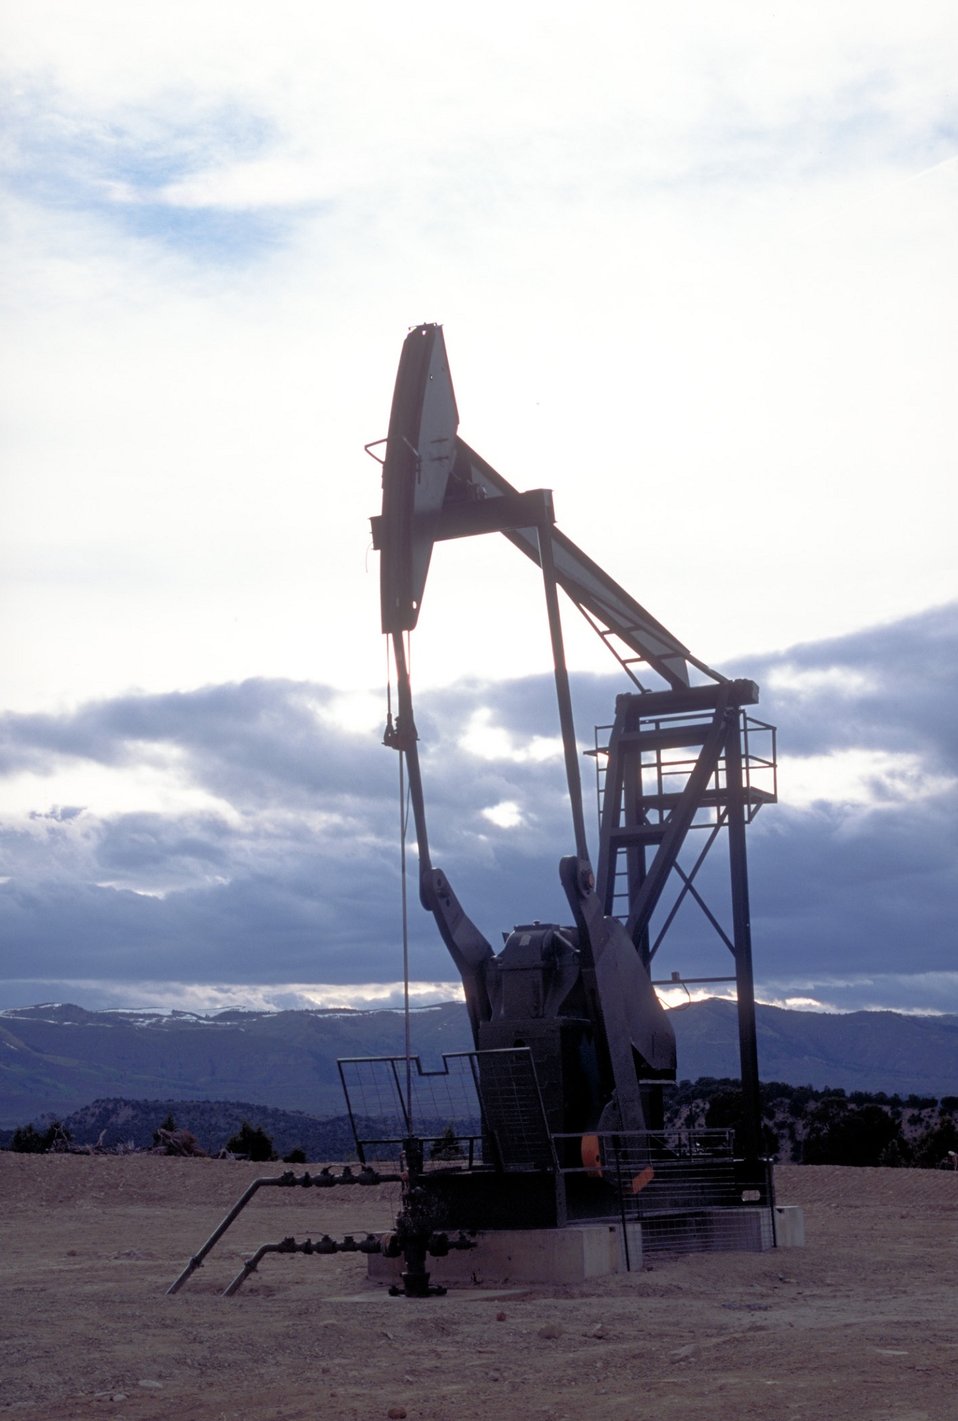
Pump unit producing coal bed methane near Price, Utah.